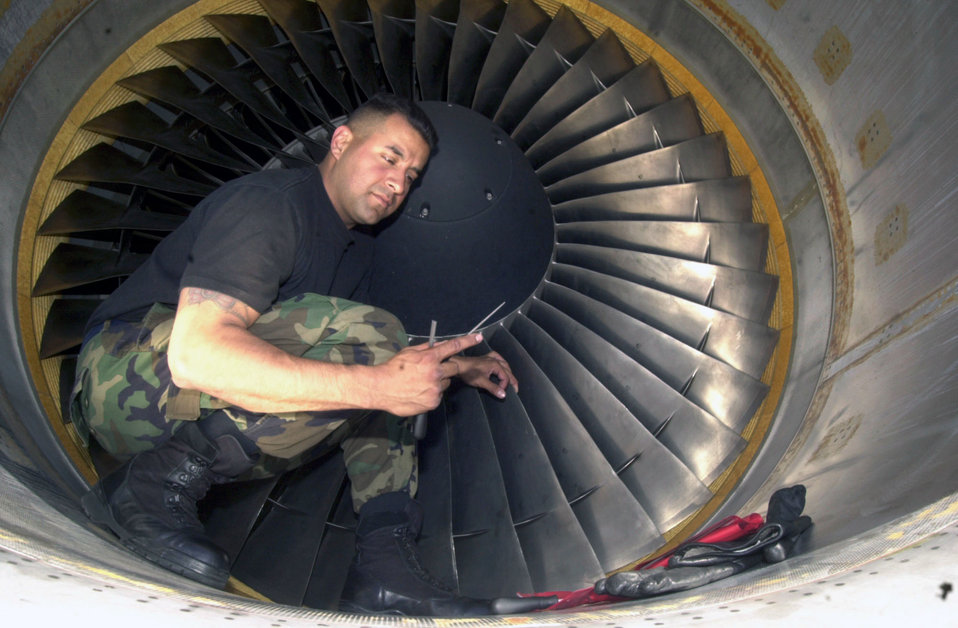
Engine fix

RHEIN-MAIN AIR BASE, Germany -- Staff Sgt. Tony Trevino, 726th Air Mobitlity Squadron jet engine mechanic, blends the blades of a C-17 Globemaster lll engine on the flightline. The 362nd Aerospace Expeditionary Group at Rhein Main set an Air Mobility Command record with 758 C-17 departures in March.